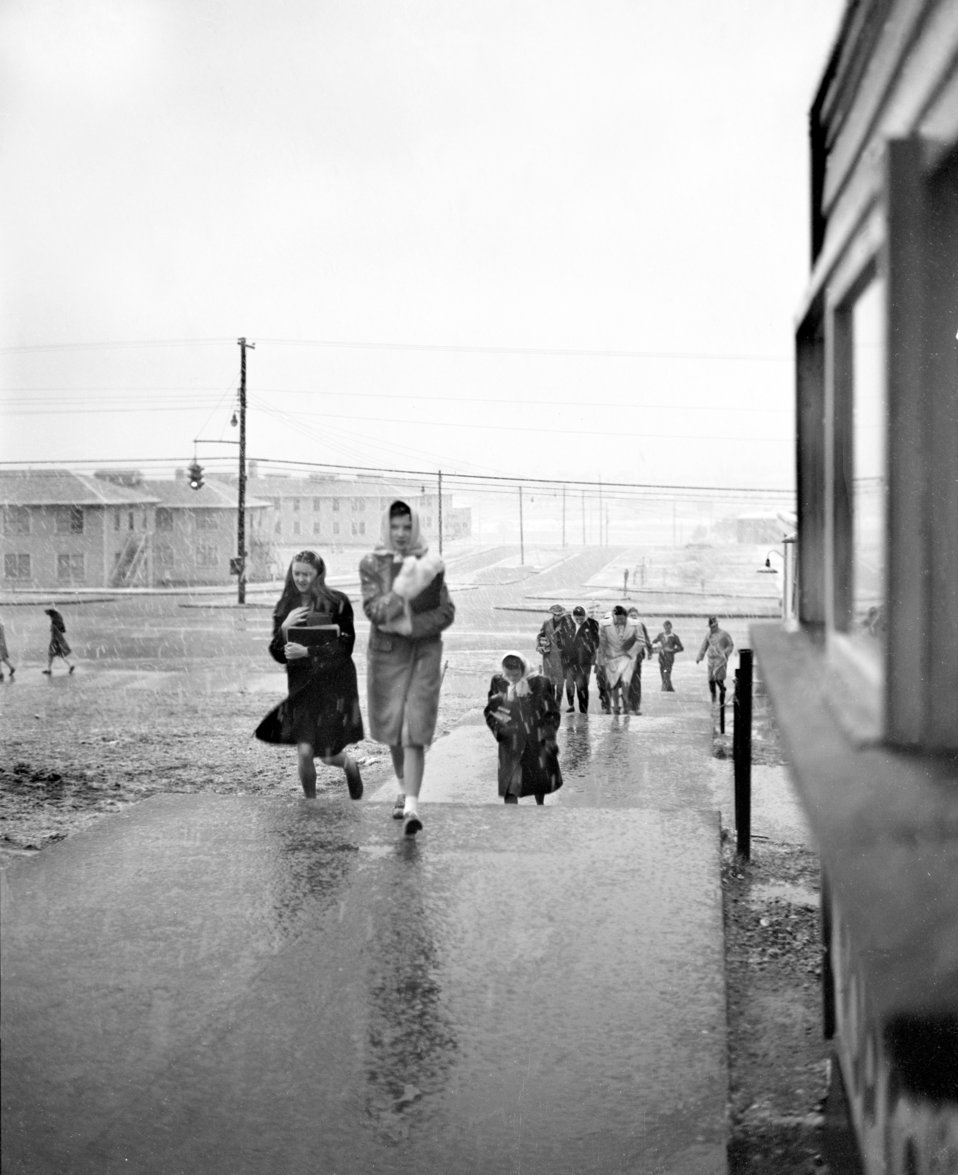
Wet Snow Jackson Square Oak Ridge 1947

3305-5a DOE photo Ed Westcott 2-20-1947 Oak Ridge Tennessee